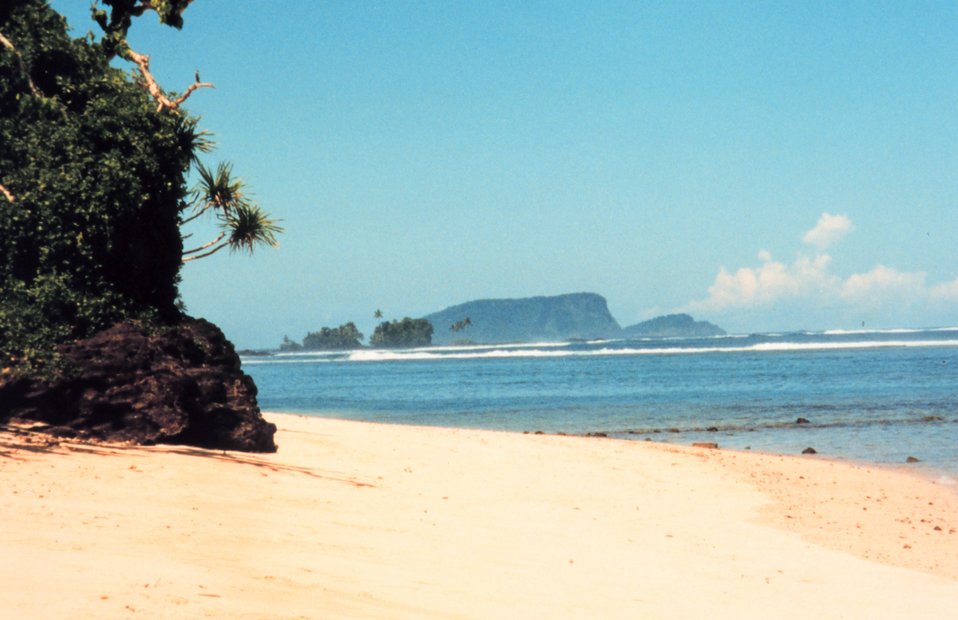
Coastal view in Western Samoa